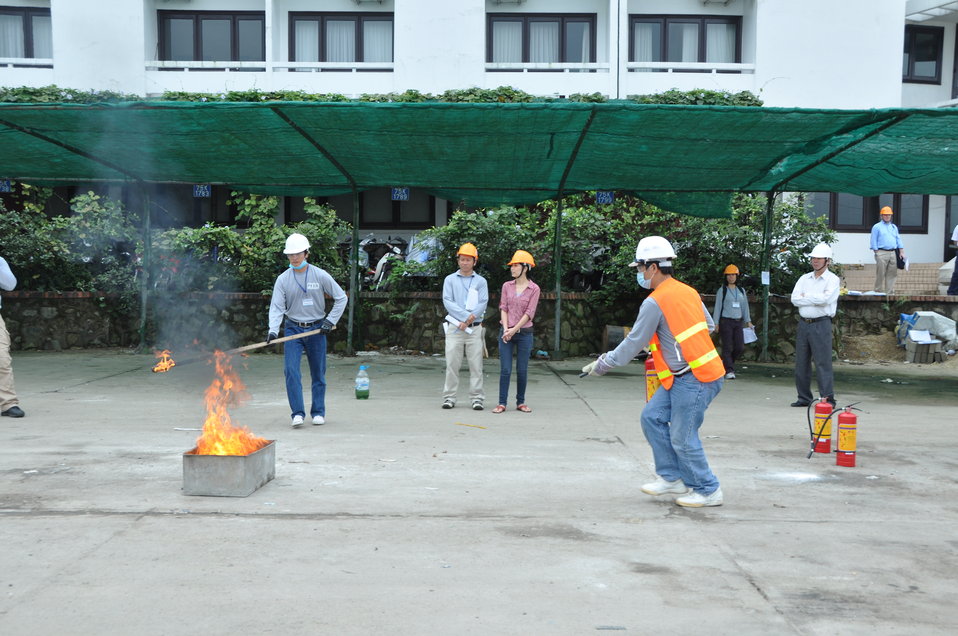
Disaster and Emergency Training Funded by USAID in Hue, Vietnam